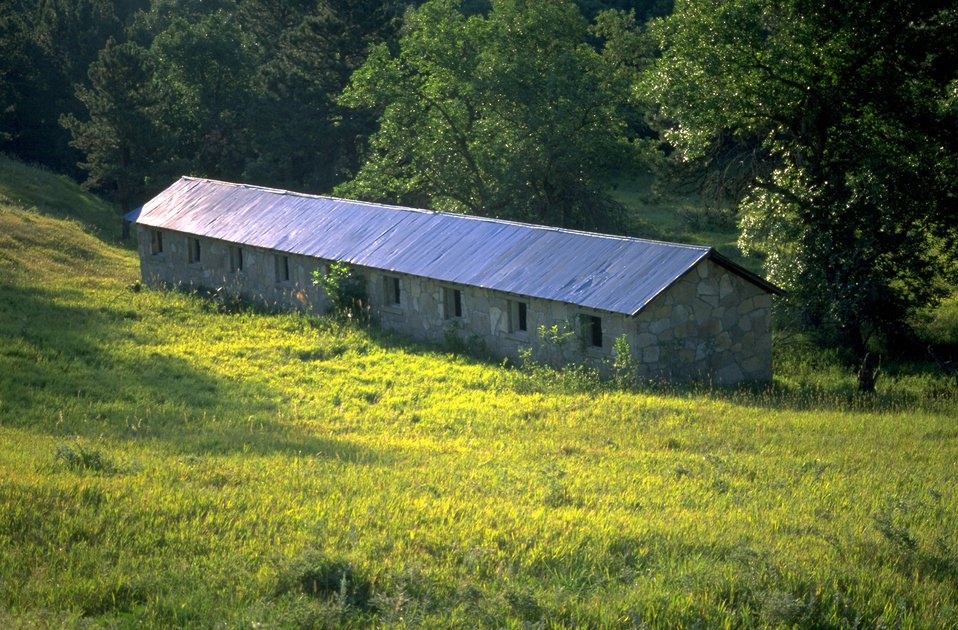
Long Stone Building at the south end of Fort Meade